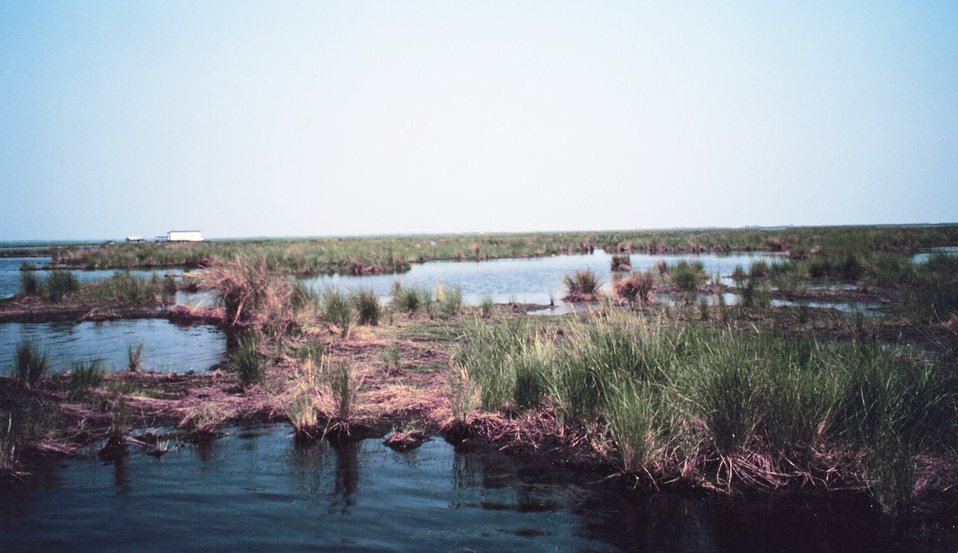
Deteriorating marsh - ponds increase in size as marsh disappears.